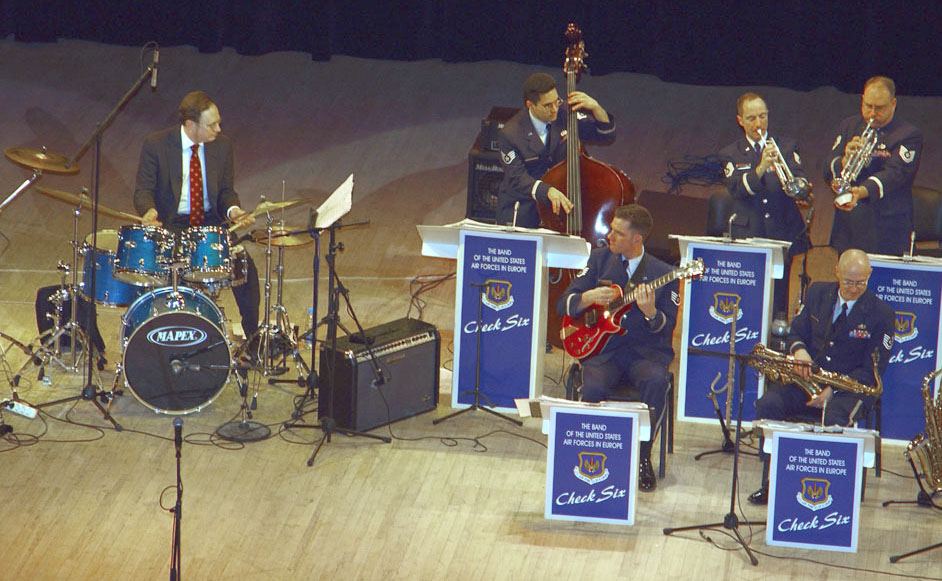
And the band plays

YEKATERINBURG, Russia -- The U.S. ambassador to the Russian Federation, Alexander Vershbow (left), was a guest drummer with a U.S. Air Forces in Europe band as they played here March 31. The band was here to celebrate the consulate's 10-year anniversary.